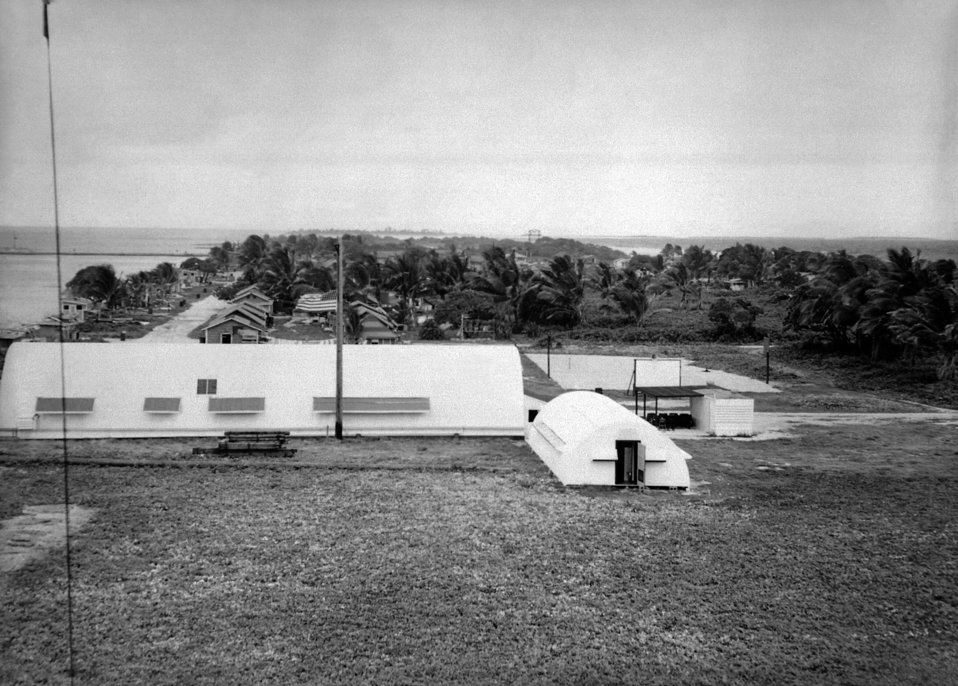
LORAN Station in Kwajalein, in the 14th CG District.